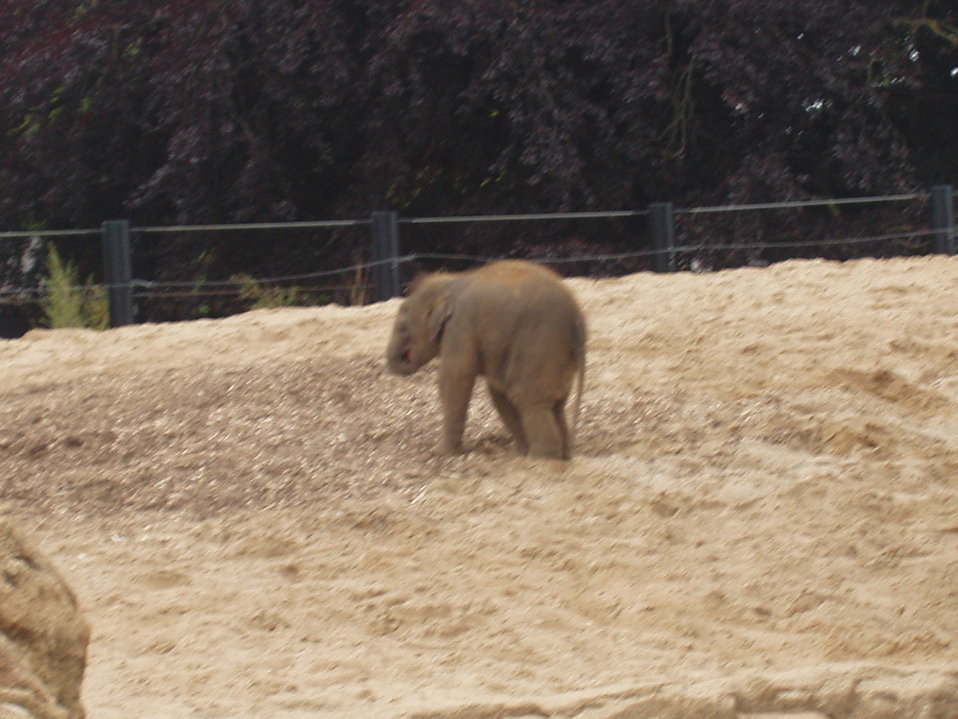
Baby elephant at Dublin Zoo.